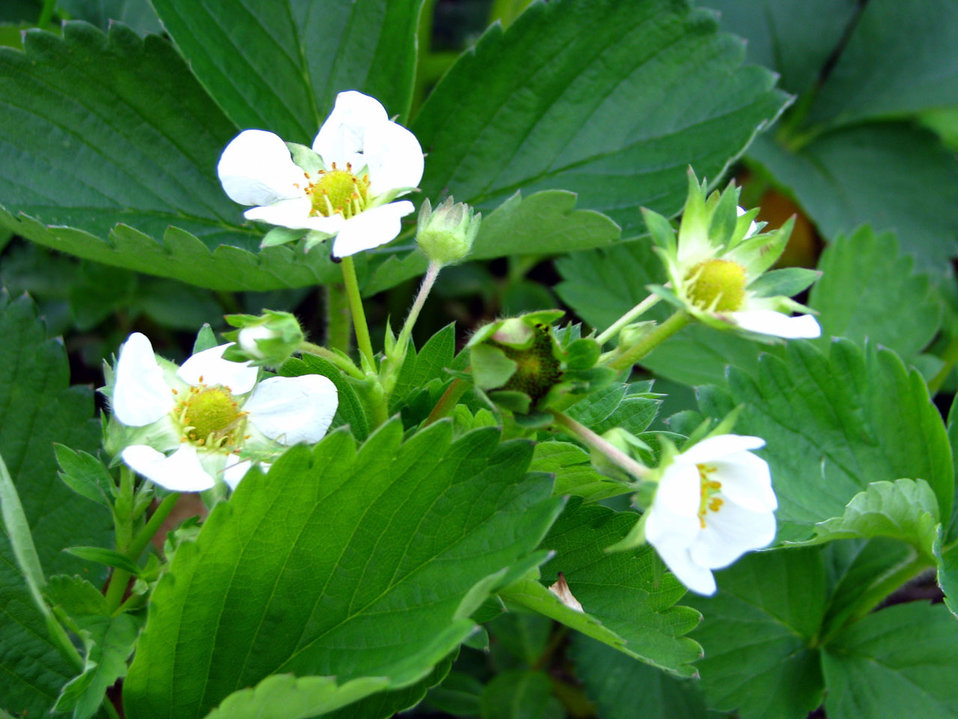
Strawberry flowers in full bloom.